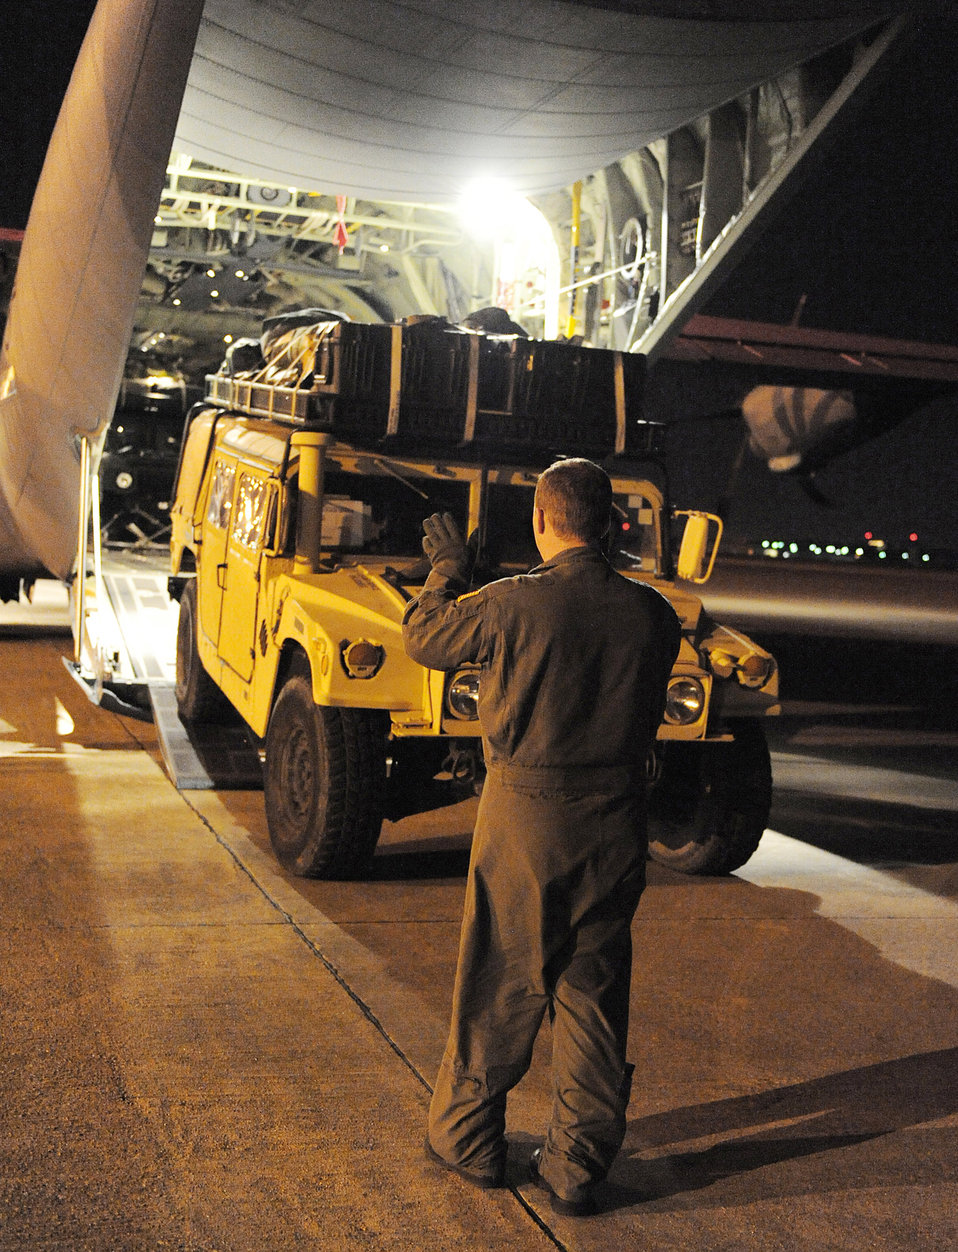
Little Rock AFB crew gets supplies on ground

Staff Sgt. Lynzey Thorton, 41st Airlift Squadron loadmaster, guides a Humvee into the back of a C-130J Super Hercules Jan. 14, 2010, at the Biloxi-Gulfport International Airport, Miss., as part of their humanitarian mission to Haiti. The aircraft launched from Little Rock Air Force Base, Ark., near midnight Jan. 13, loaded personnel and equipment before dawn at Biloxi-Gulfport International Airport, Miss., and delivered them to the Toussaint L'Ouverture International Airport in Port-au-Prince, Haiti, the morning of Jan. 14.